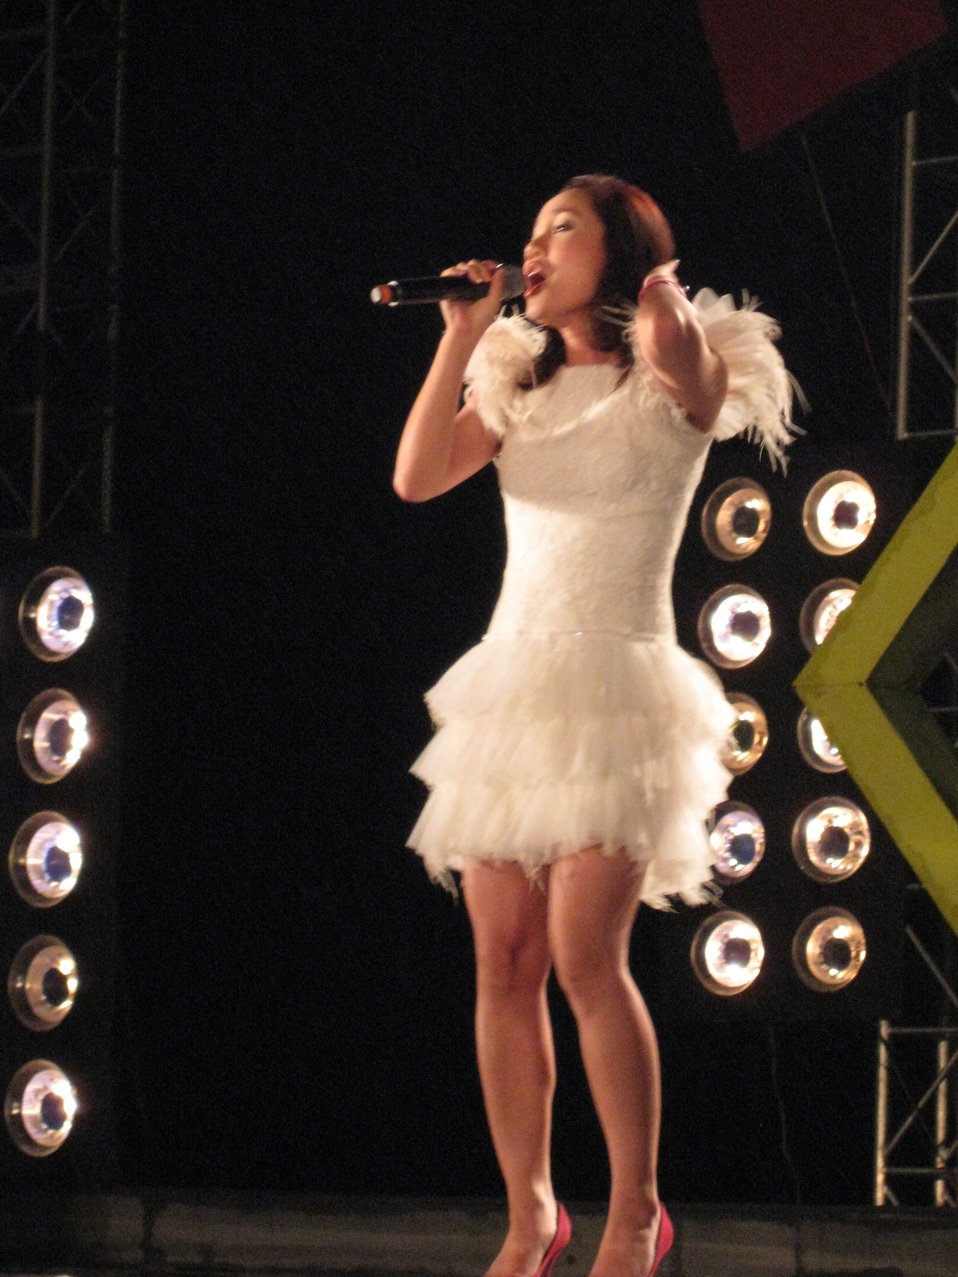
USAID and MTVEXIT Concert Halong Bay

Halong Bay Concert, April 4, 2010